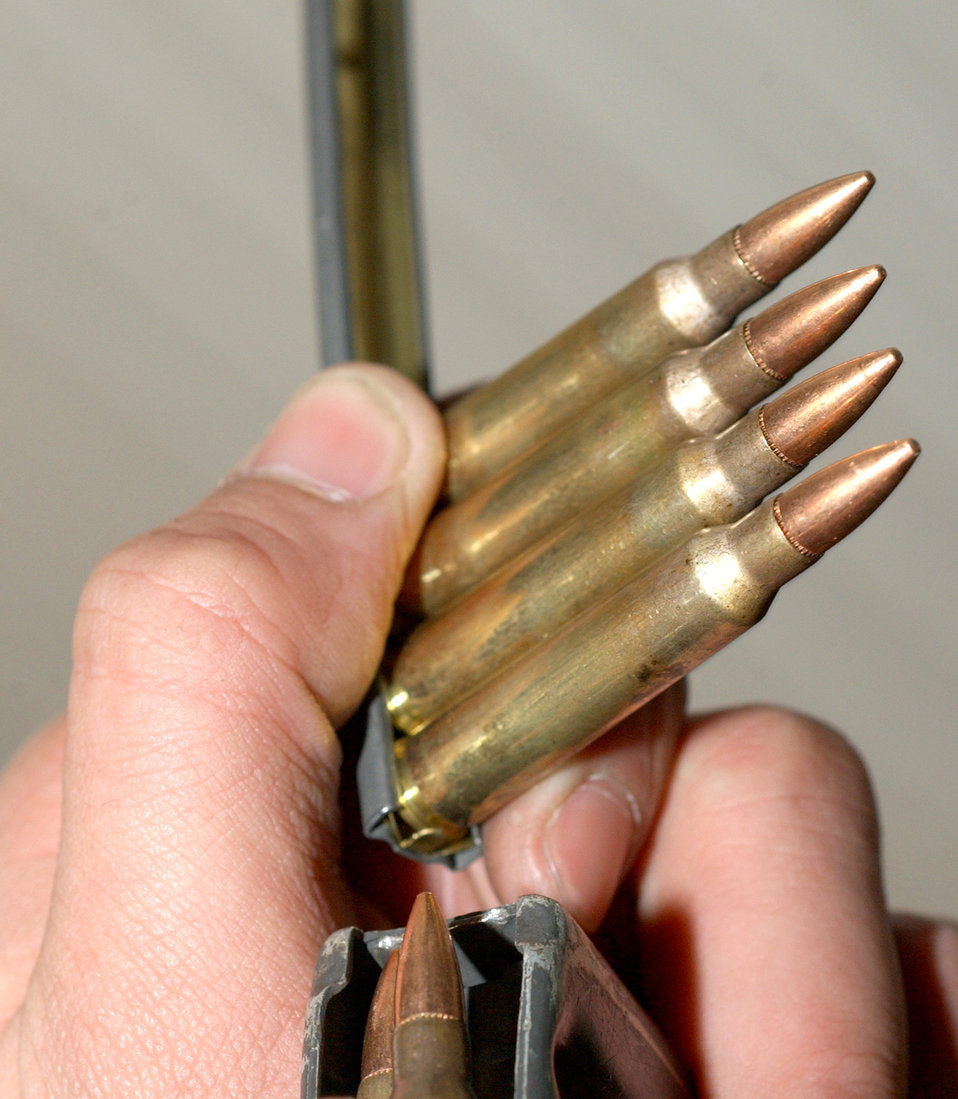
Load the clip

AVIANO AIR BASE, Italy -- A member of the 31st Security Forces Squadron reloads a magazine used on an M-4 Carbine machine gun during combat arms training here March 7.